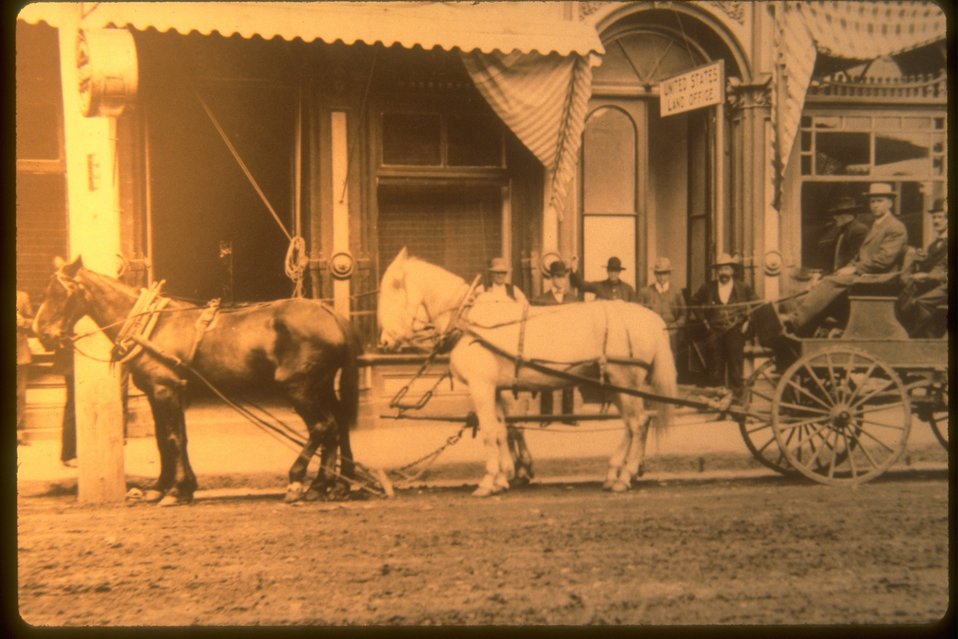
United States General Land Office (US GLO) in Roseburg. (Douglas County Museum #5287)